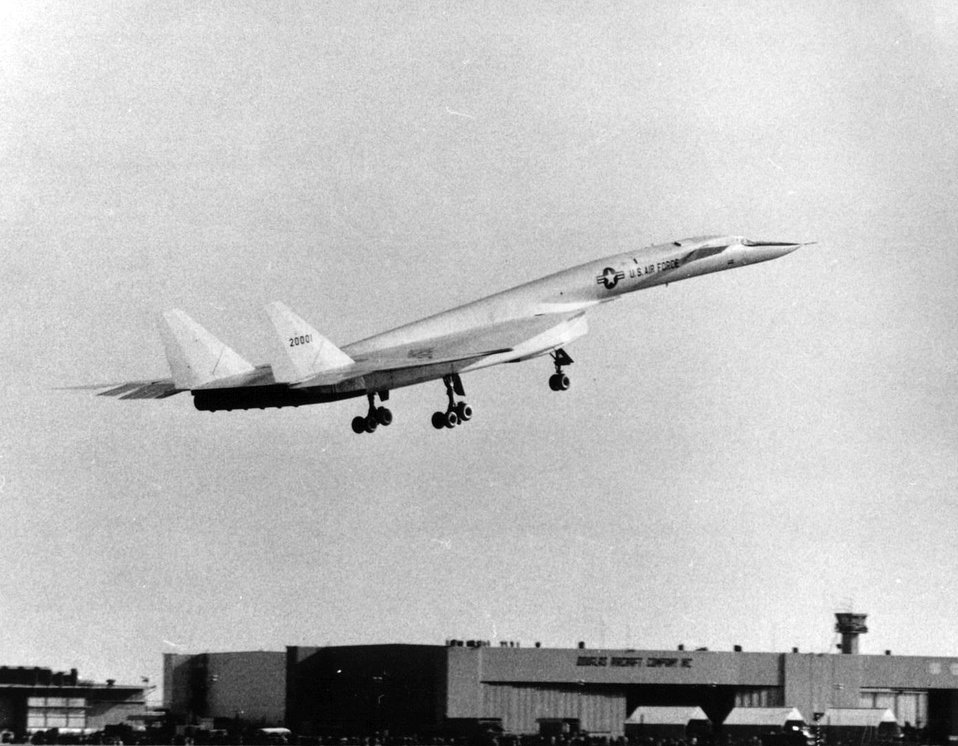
XB-70A Valkyrie first flight

The XB-70A Valkyrie from North American takes off on its first flight, Sept. 21, 1964.